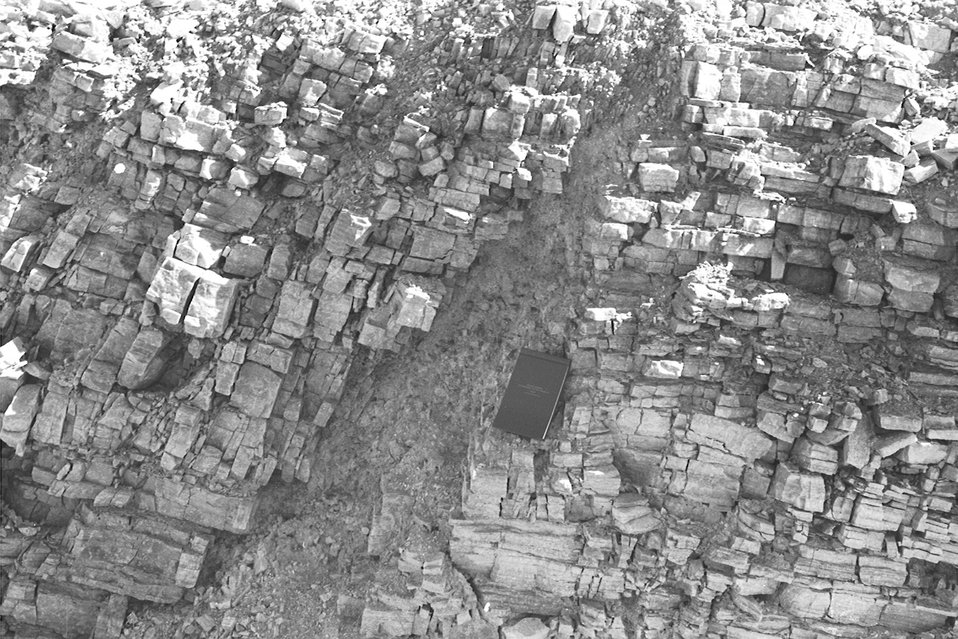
Brittle fraction in Oakley Burley Field Office USRD Upper Snake River District